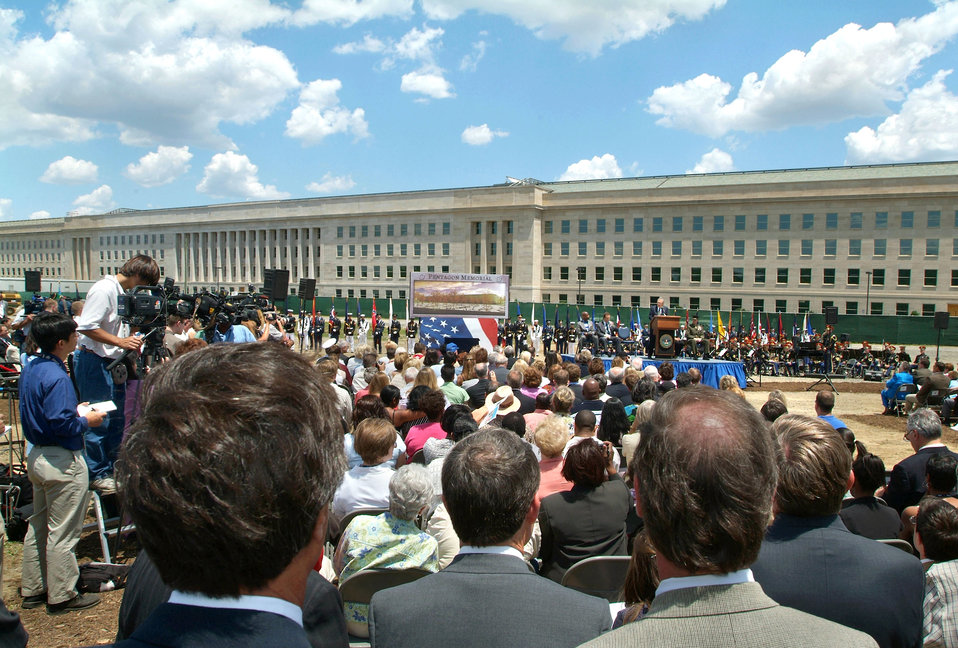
Site dedicated to Pentagon's Sept. 11 victims

Secretary of Defense Donald H. Rumsfeld speaks at the Pentagon Memorial groundbreaking ceremony on Thursday, June 15. The memorial, tentatively scheduled for completion in September 2008, is dedicated in memory of the 184 lives lost when American Airlines Flight 77 crashed into the Pentagon on Sept. 11, 2001.